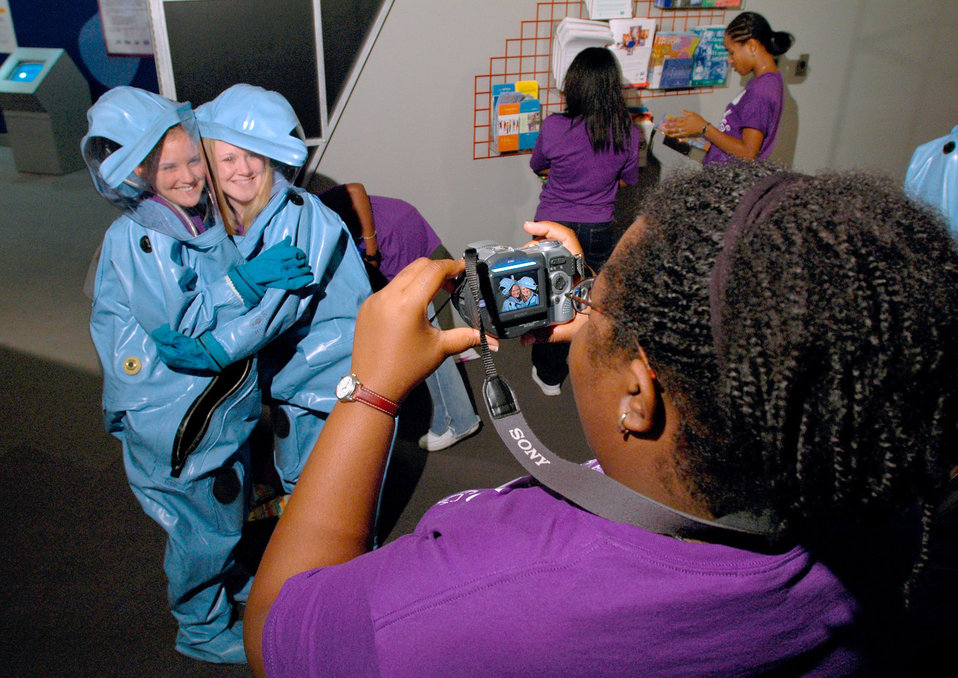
This photograph showed a number of students from Macon, Georgia's Wesleyan College, who were visiting the Center for Disease Control's (CDC) Global Health Odyssey (GHO) Museum, while two of them were posing for a picture wearing blue HAZMAT suits. At the time of this image, the GHO was located in its former location on the organization's Atlanta, Georgia Roybal Campus, in Building 1. The GHO is still located on the Roybal Campus, but is now situated in the new Tom Harkin Global Communications Center. The exhibit area features permanent and changing exhibitions that focus on a variety of public health topics, as well as the history of CDC. The exhibits in the GHO are self-guided and require no advance reservations. Additional curriculum-based exhibits and programming will be added in the future.